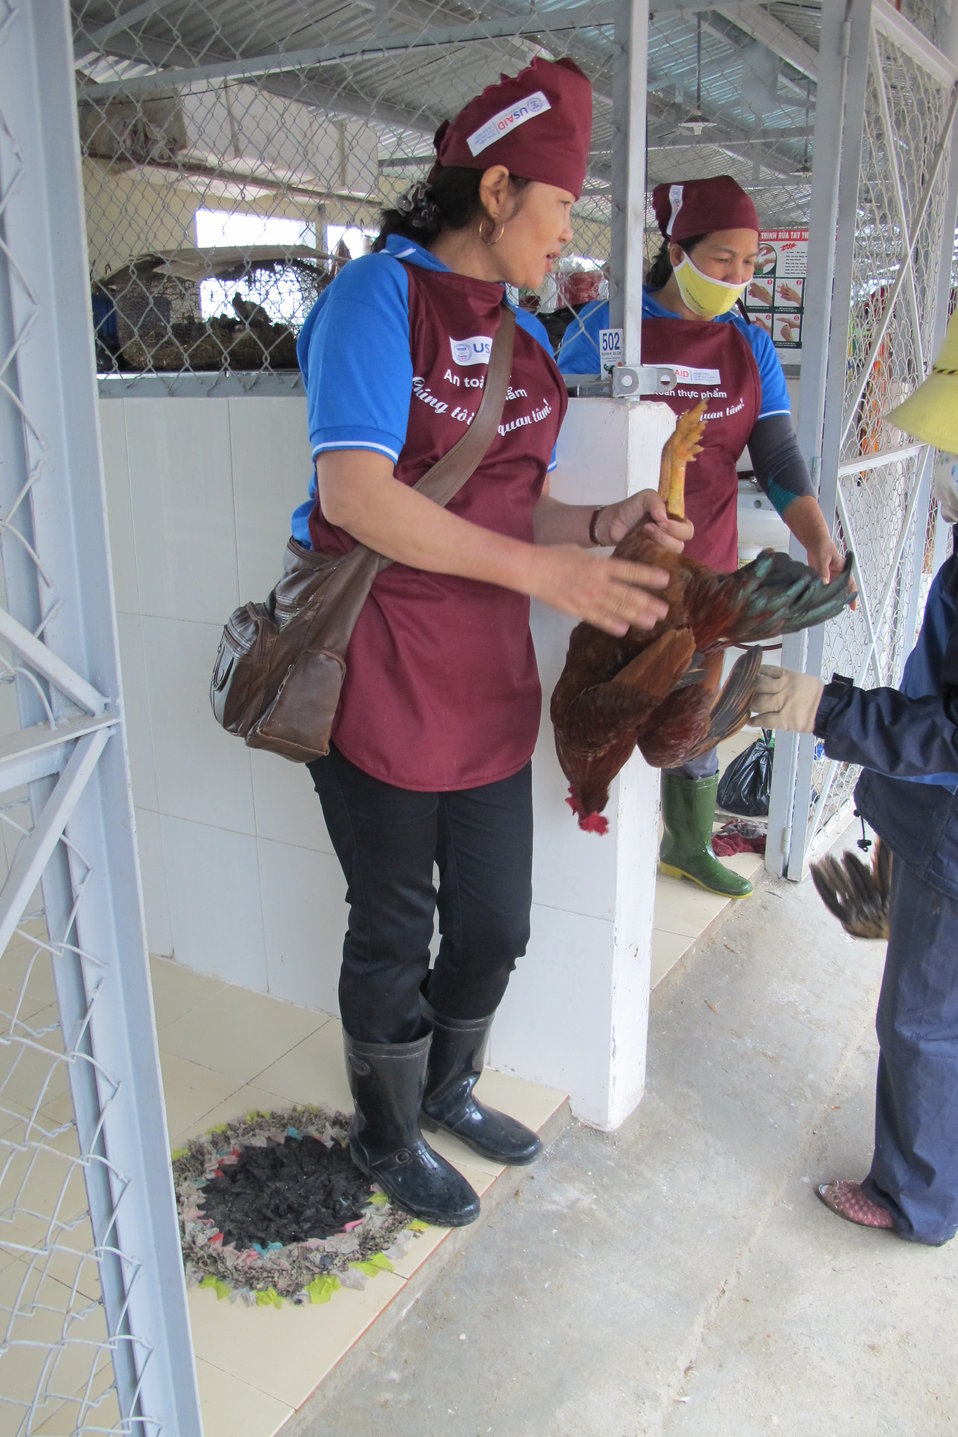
Hygiene and Sanitation at Dong Ha Poultry Market